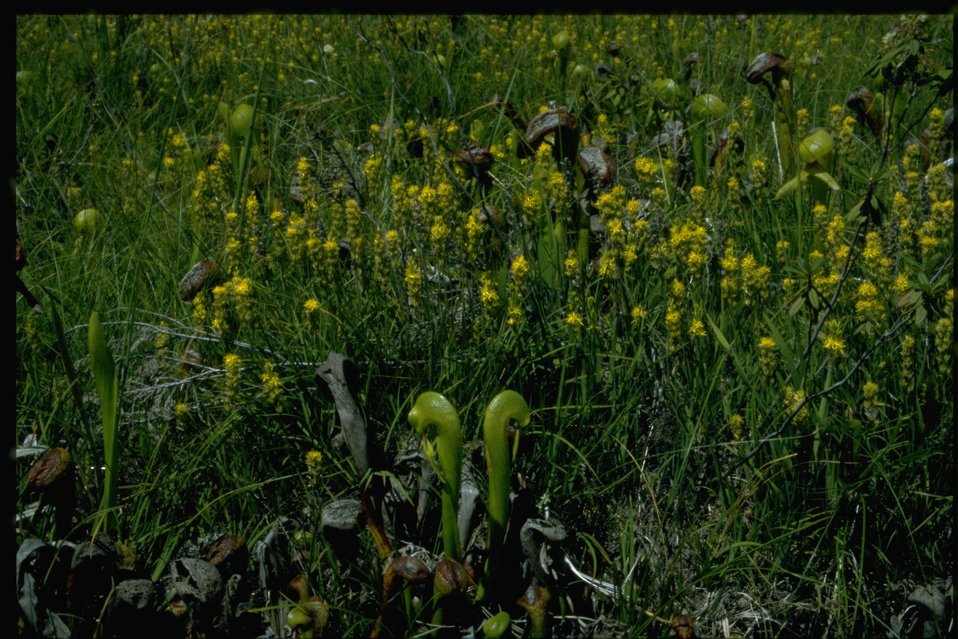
Farshot of Darlingtonia.